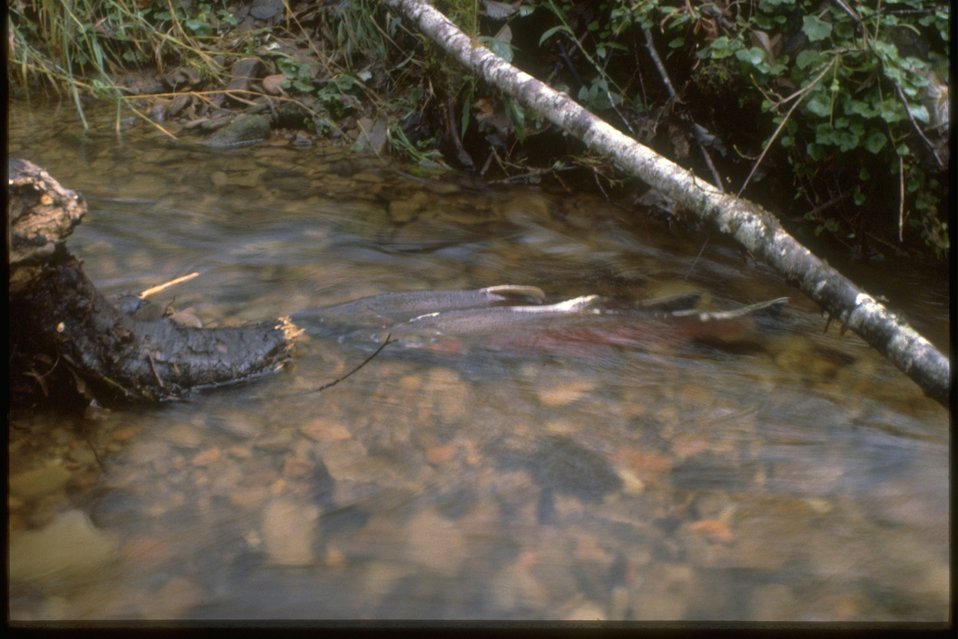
Coho Salmon swimming through Fish Creek.